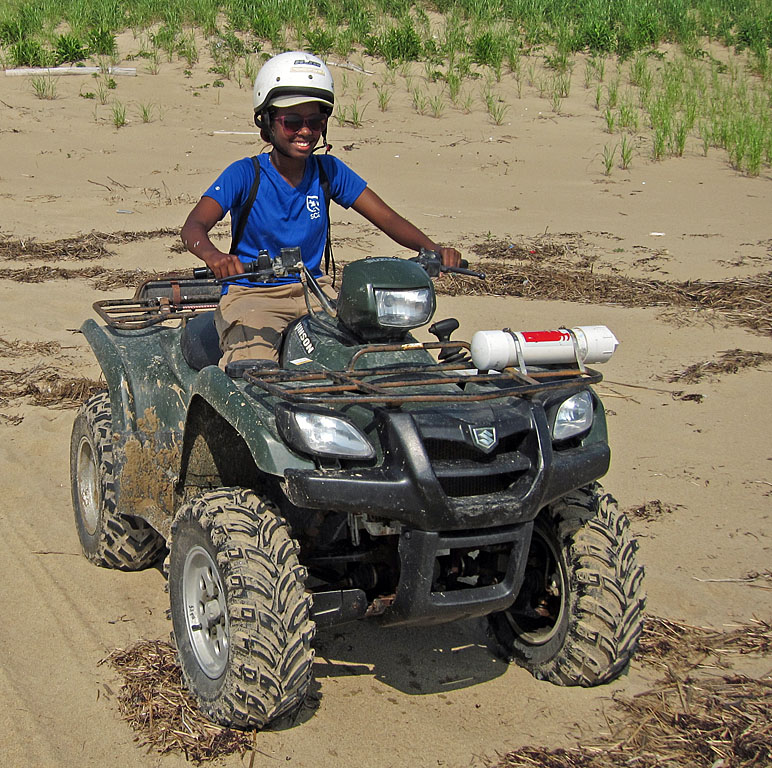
Monitoring invasive species

A CDIP intern patrols the beach to monitor the presence of invasive species at Parker River National Wildlife Refuge.